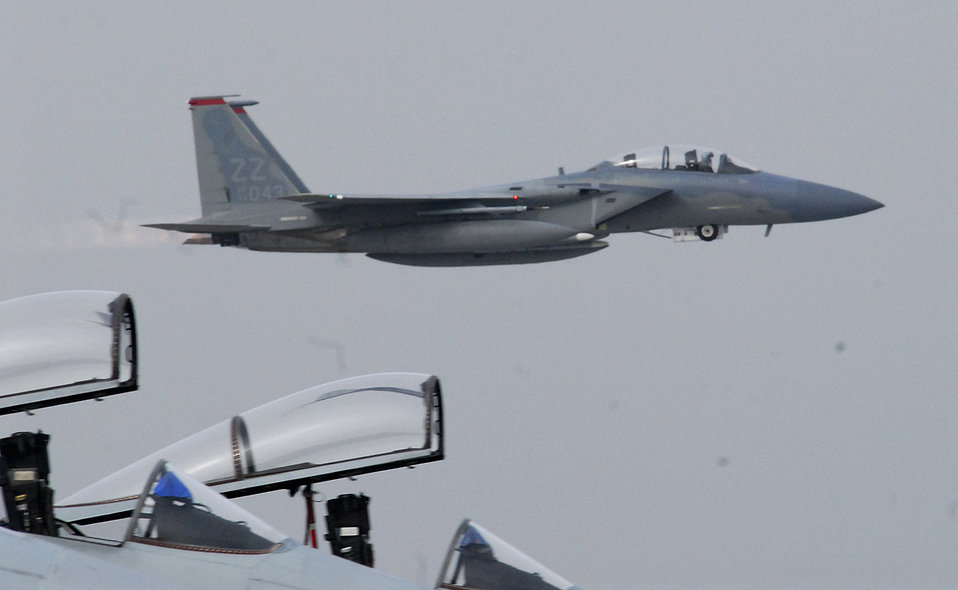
Ready to go

Maj. Tom Hunt, a pilot from the 67th Fighter Squadron, takes off from Hyakuri Air Base, Japan, Feb. 1, 2010. Almost 100 Kadena Air Base Airmen are operating alongside their Japanese counterparts for the week to enhance the interoperability of the two nation's air forces for the common defense of Japan.